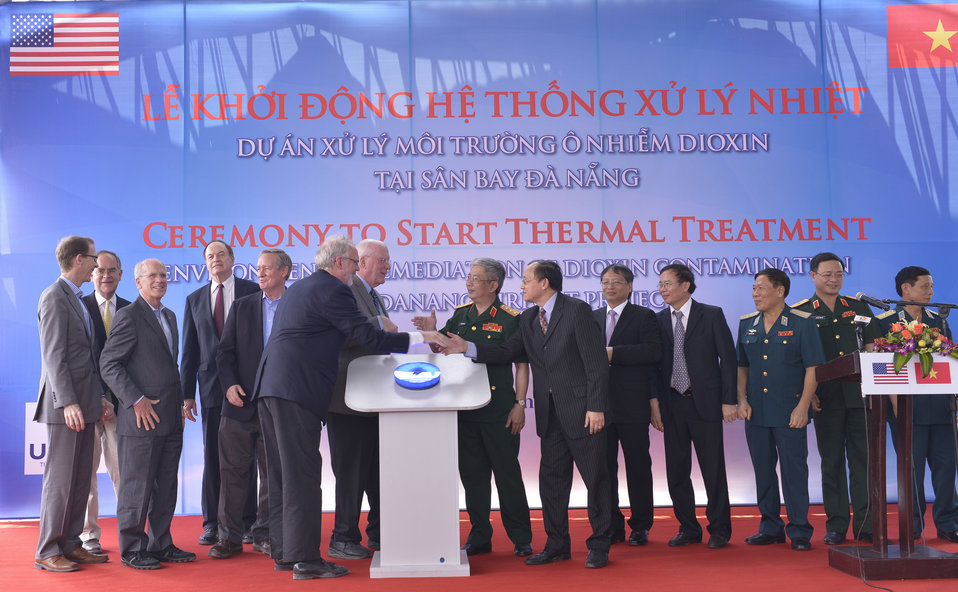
Senator Leahy, Senior Lieutenant General Nguyen Chi Vinh, Vietnam’s Vice Minister of National Defense, U.S. Ambassador David Shear and Vice Chairman of Vietnam’s National Assembly’s Foreign Relations Committee Ha Thuy Thong switched on the thermal t

Danang, April 19, 2014.